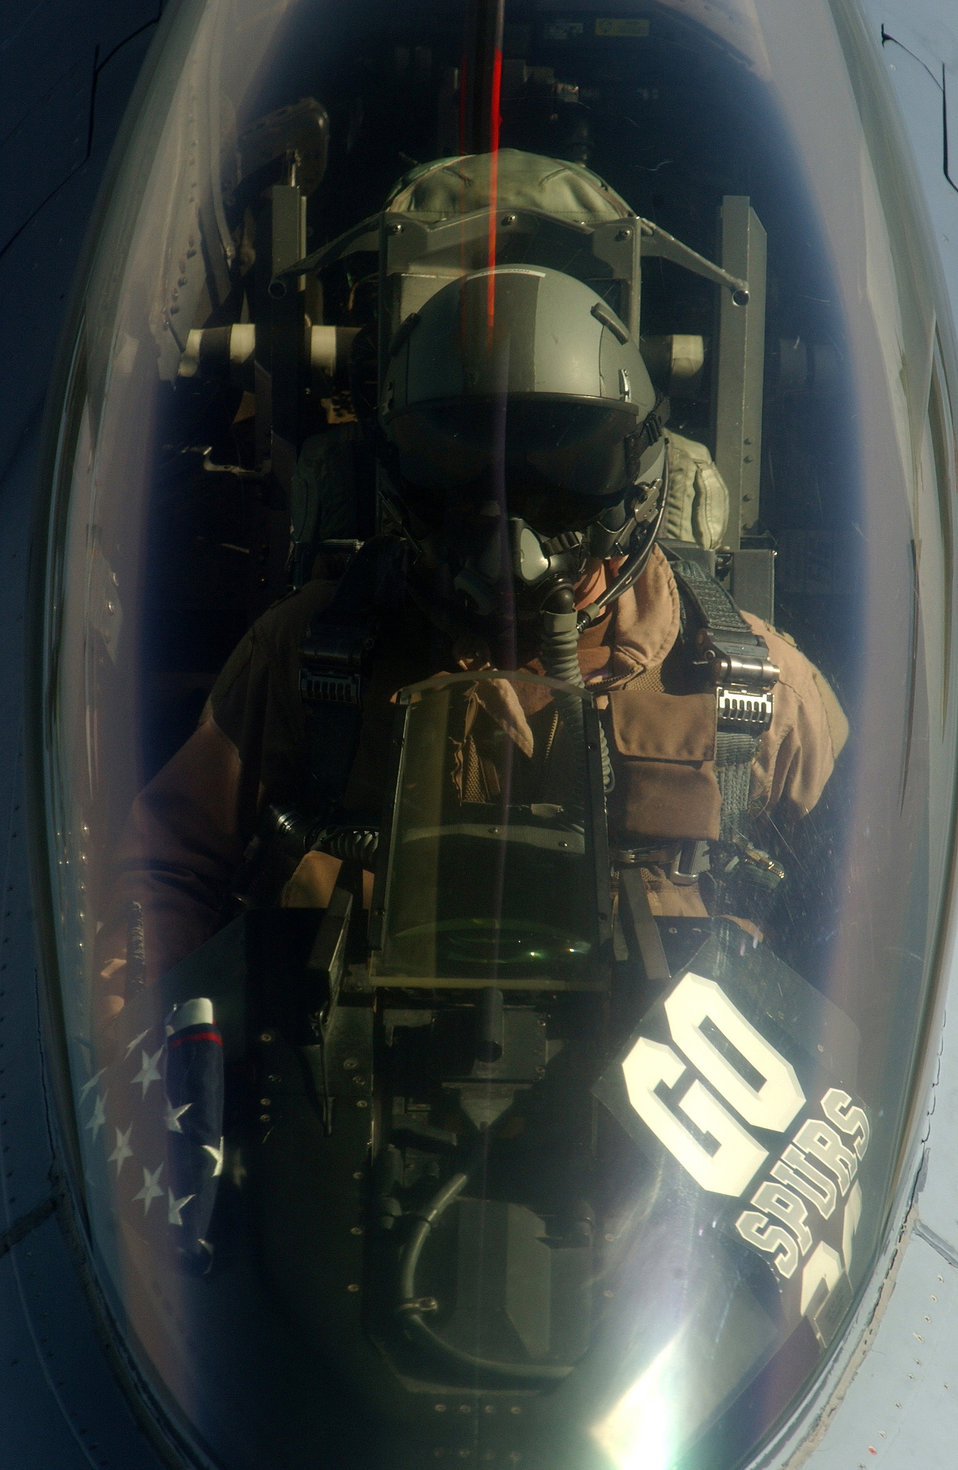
Spurs spirit

SOUTHWEST ASIA -- An F-16 Fighting Falcon flies a combat sortie in support of Operation Iraqi Freedom May 7.